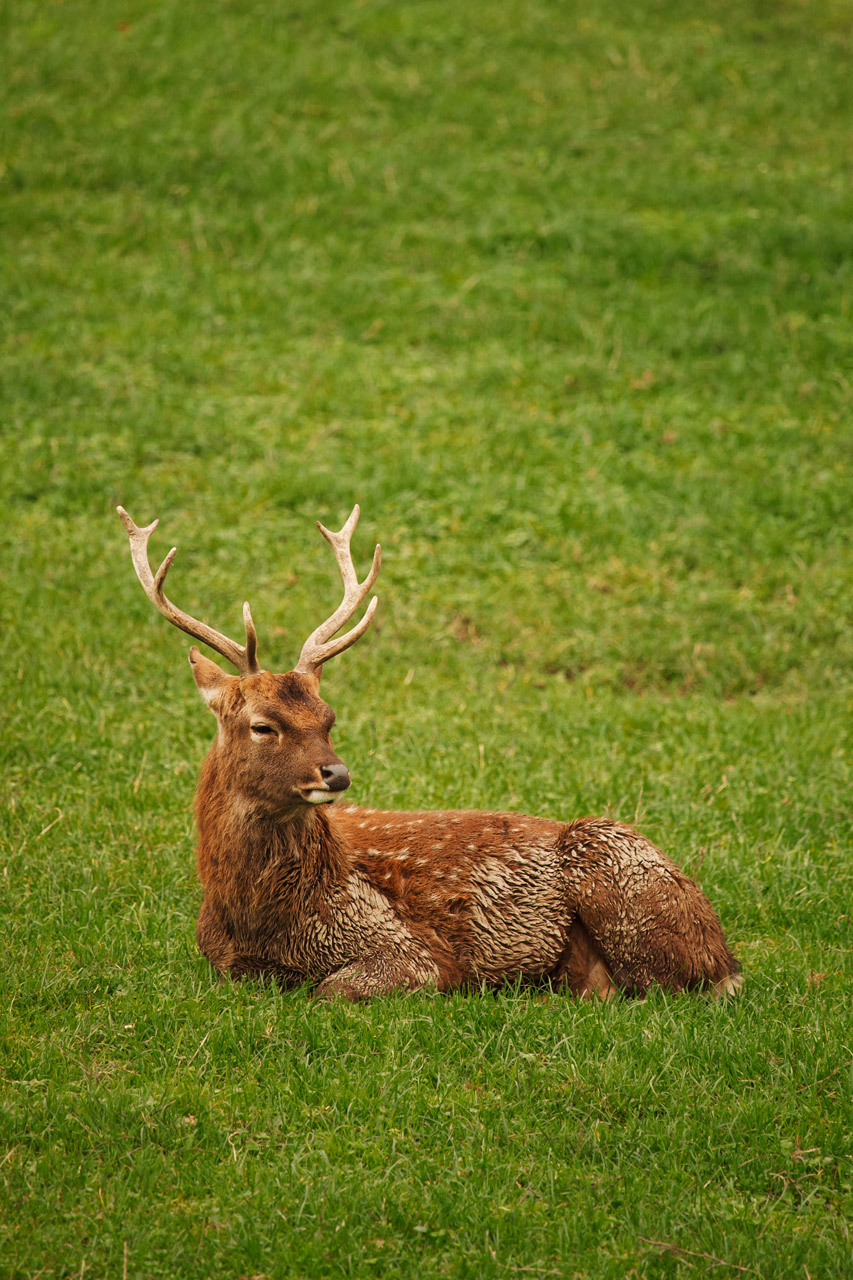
Deer on grass

Deer lying on green grass background.